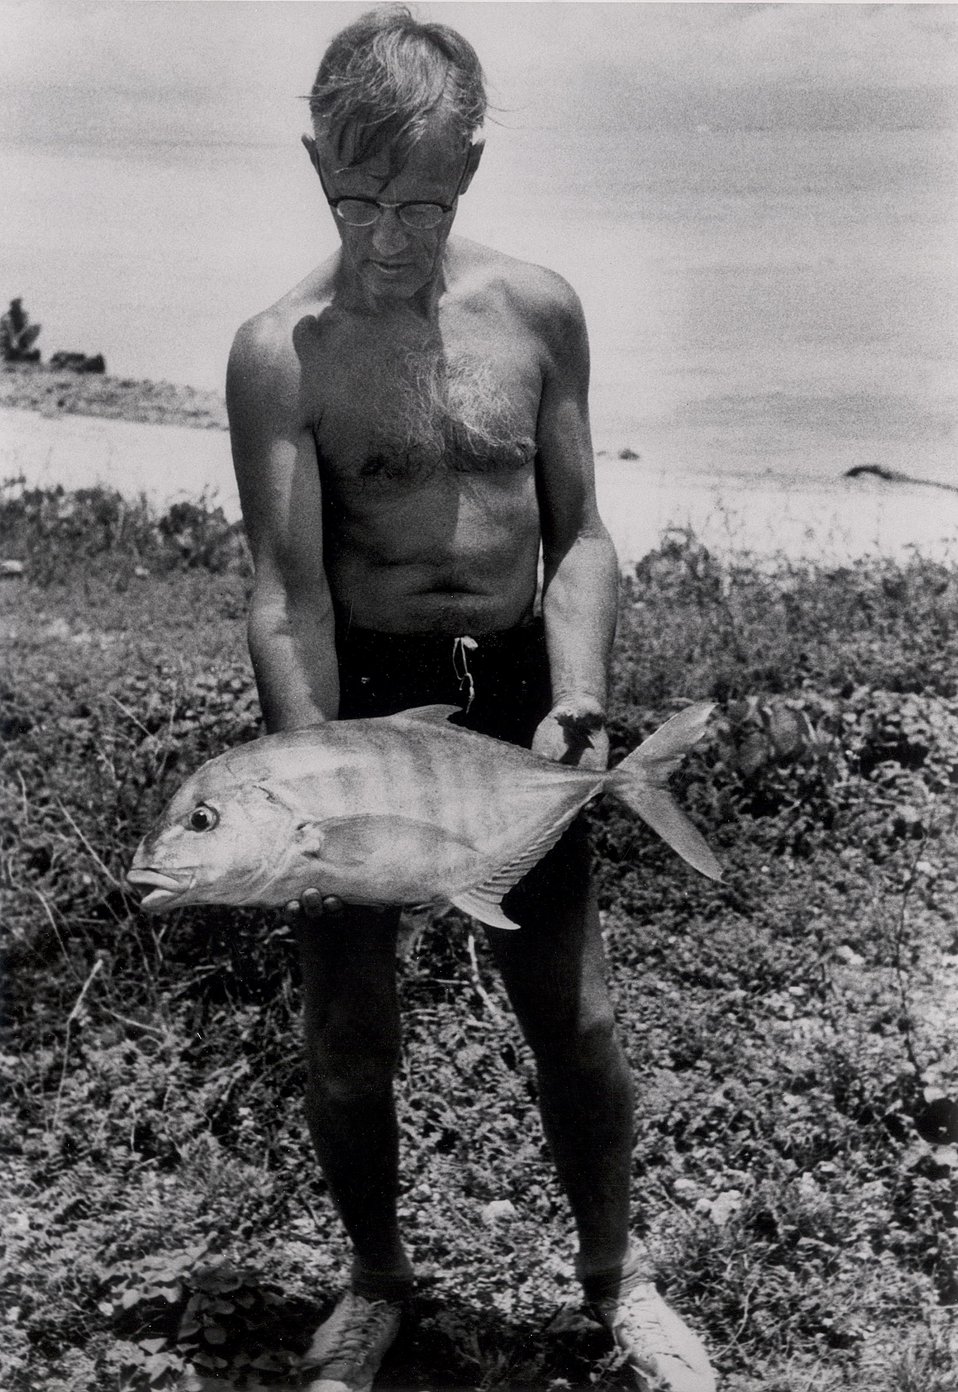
Scientists check the condition of Bikini and Eniwetok Atolls six years after the last US atmospheric nuclear test there.